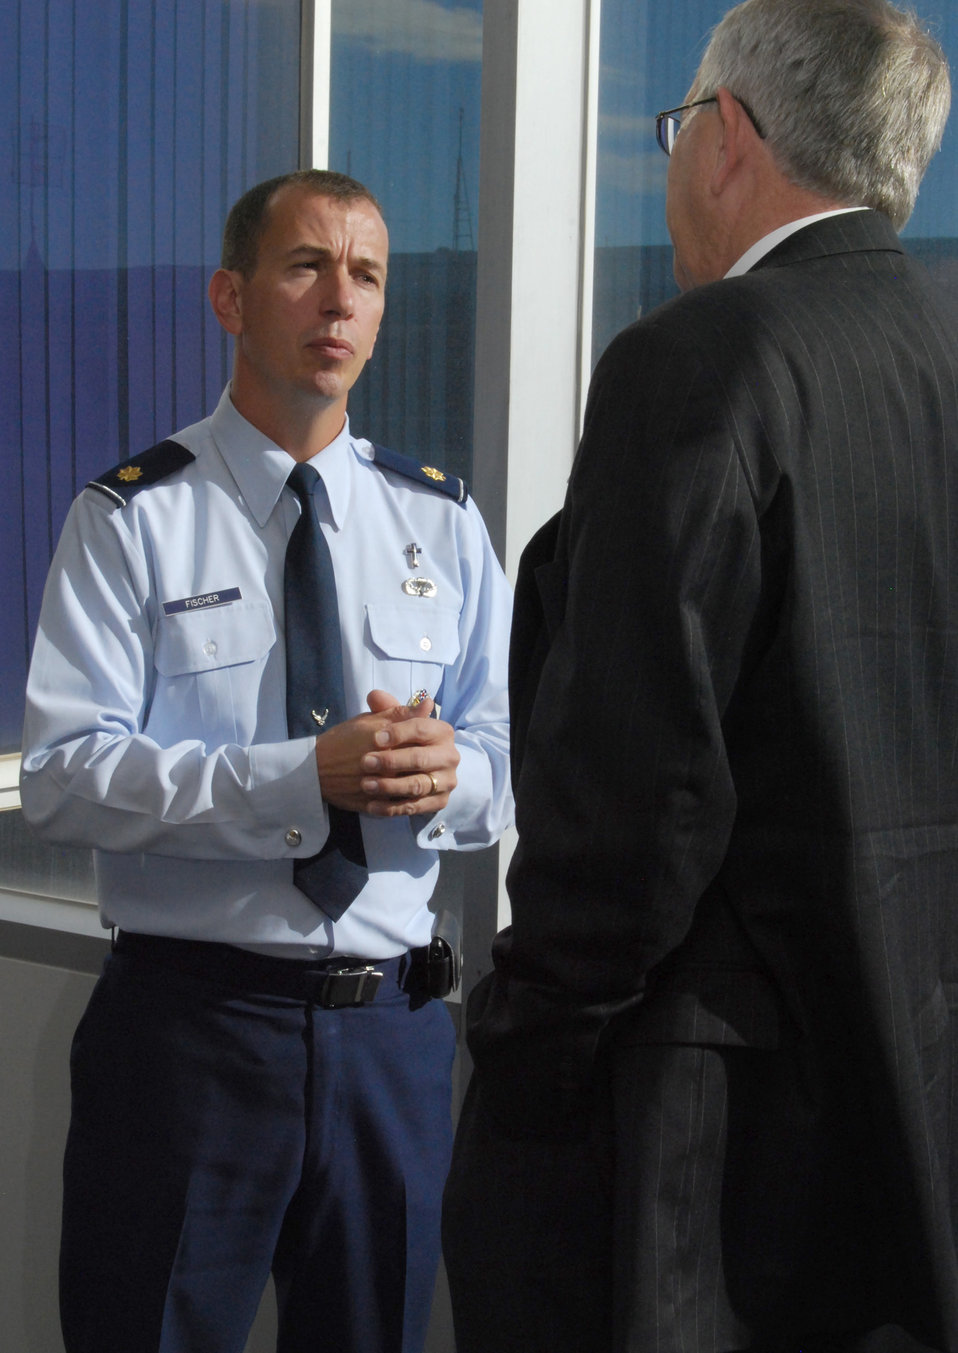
Religious respect conference

Chaplain (Maj.) Peter Fischer and the Right Reverend James Magness talk during a break at the Religious Respect Conference Nov. 16, 2010, at the Air Force Academy, Colo. Topics at the conference included balancing freedom of religious expression with the Constitution's prohibition against establishing or endorsing religion. Chaplain Fischer is the Academy's senior protestant chaplain. Reverend Magness is the bishop suffragan for federal ministries for the Office of Federal Ministries of the Episcopal Church.